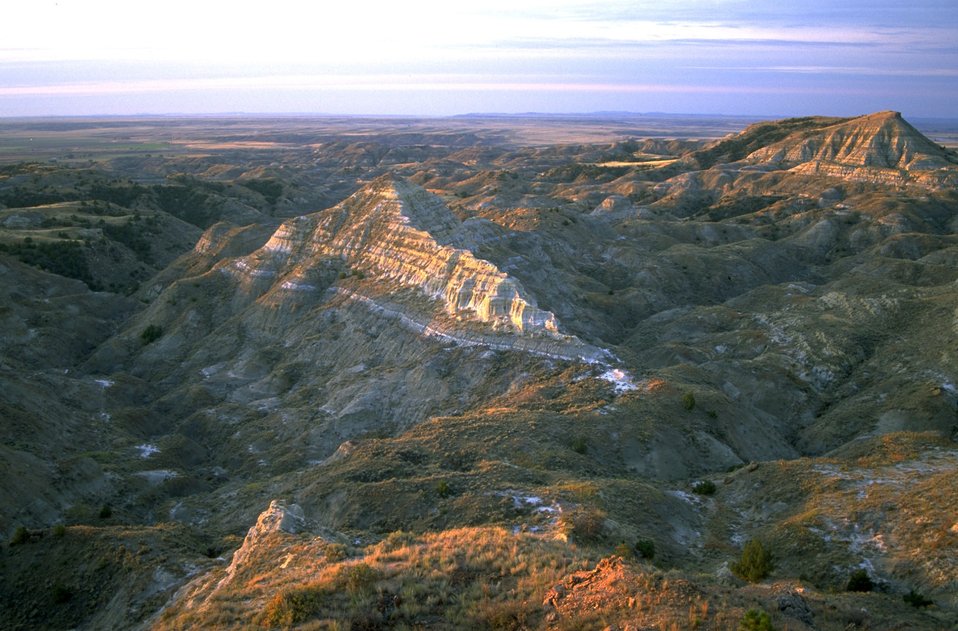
Terry Badlands Wilderness Study Area